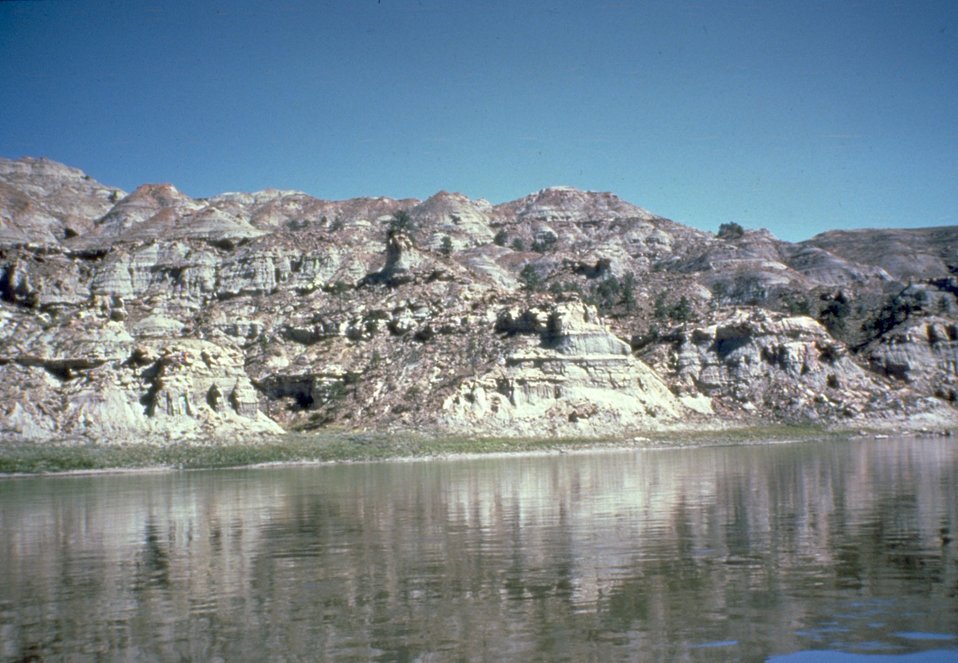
Irvin ridge on Missouri